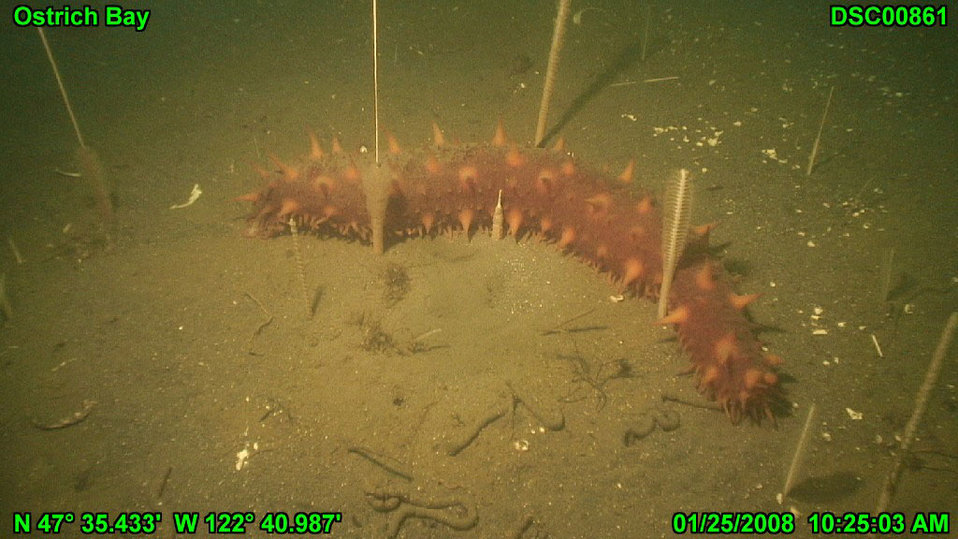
Sea cucumber and sea pens (resembling old-fashioned quill pens) on the sandy bottom beneath Ostrich Bay in Dyes Inlet in central Puget Sound. This photo was taken as part of a habitat survey within the Jackson Park Housing Complex Superfund site, a former Navy ammunition depot where past waste disposal practices led to contamination of sediments in Ostrich Bay.

Learn more about the Puget Sound Ecosystem

Learn more about EPA